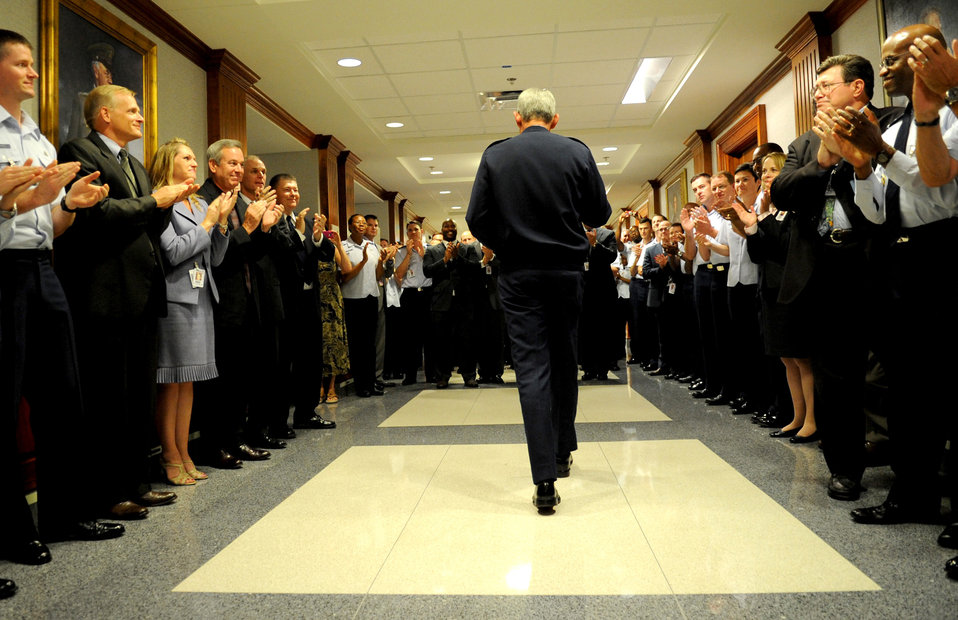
AF Chief of Staff

Gen. Norton Schwartz was surprised with applause from hundreds of Airmen lining the Pentagon hallway, Aug. 8, 2012, as he departed the building for the final time as the AirForce Chief of Staff. Schwartz will retire in a ceremony Friday, after serving 39 years in the Air Force, the last four years as the Air Force's senior uniformed leader.